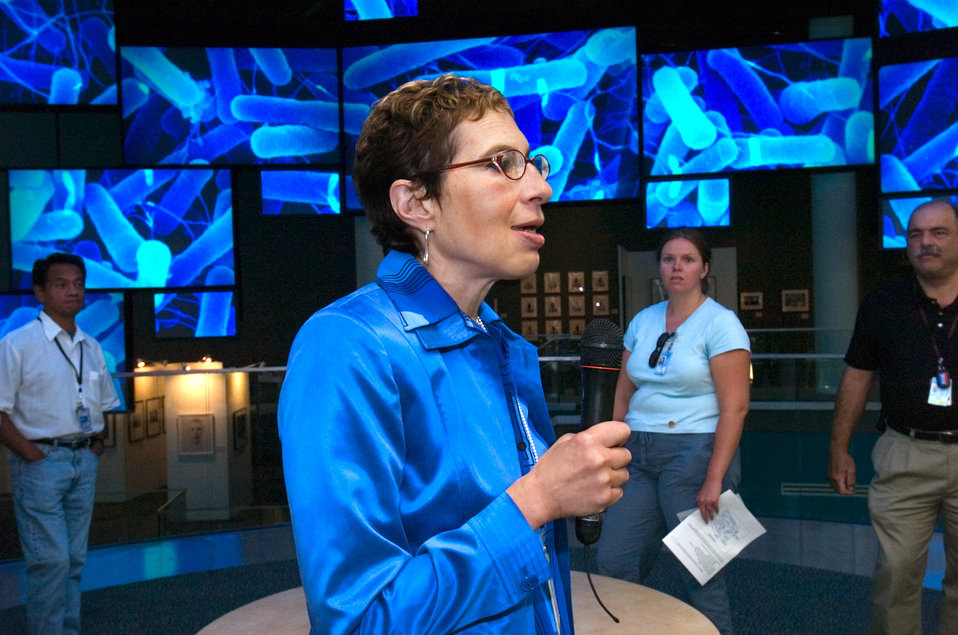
During the 'Employee Preview Day' in September, 2005, Louise Shaw, the Global Health Odyssey (GHO) Museum curator, was shown talking to Center for Disease Control (CDC) employees about the new gallery in the organization's Visitor and Education Center. With its 'flexible-media' installation consisting of 10 rearview projection screens and 8 plasma screens, this display will show breaking public health program news, and other informative productions.